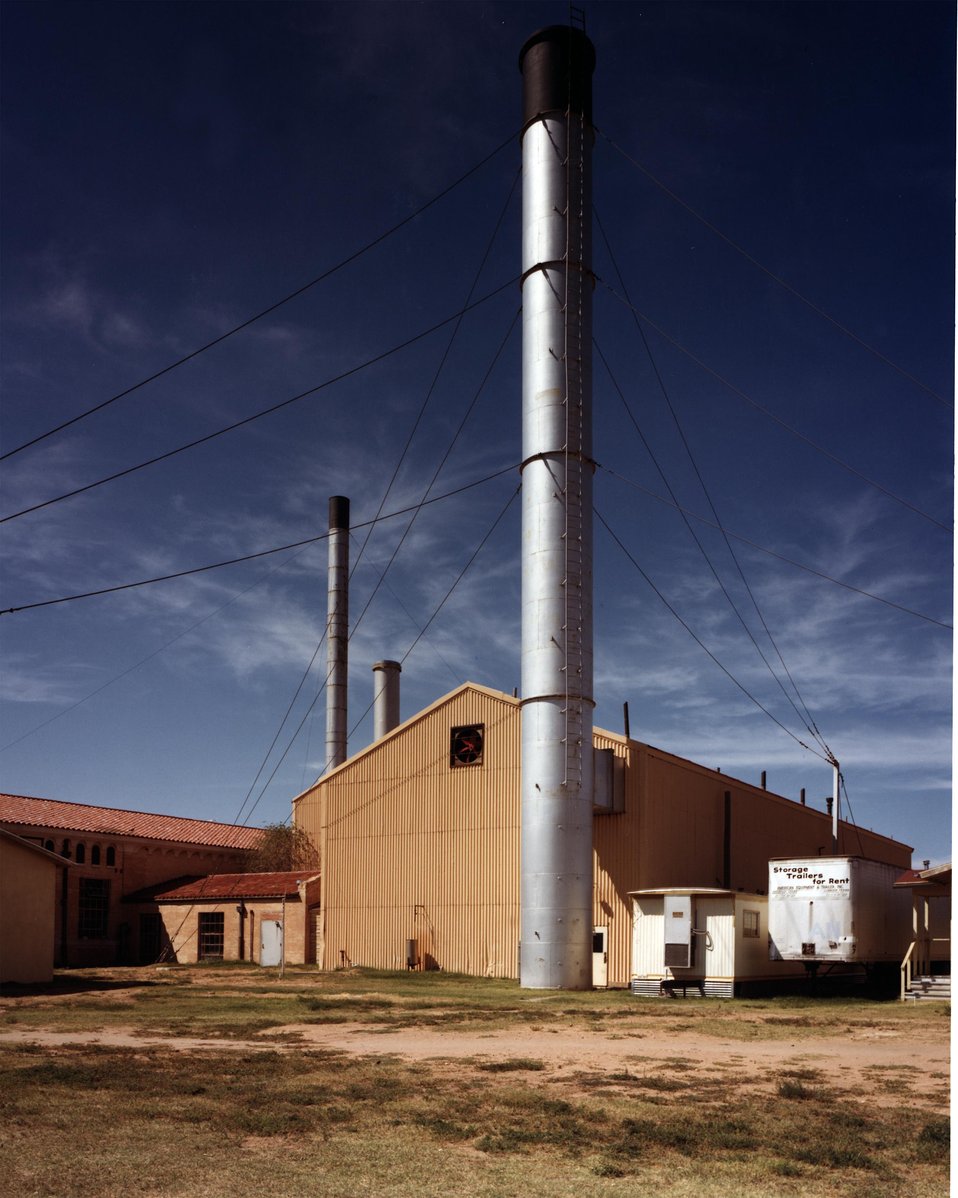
THE SGFM PILOT PLANT IS INSIDE THE OLD POWER PLANT AT TEXAS TECH UNIVERSITY.

THIS PROJECT ENTAILS CONDUCTING STUDIES IN AN EXISTING ONE- HALF TON PER-DAY TEST REACTOR, UTILIZING ANIMAL MANURES AND OTHER BIOMASS MATERIALS AS FEED STOCKS, TO DETERMINE THE INFLUENCE OF TEMPERATURE, RESIDENCE TIME, PRESSURE, AND FEED STOCK MATERIALS ON THE YIELD AND QUALITY OF THE PROCESS.